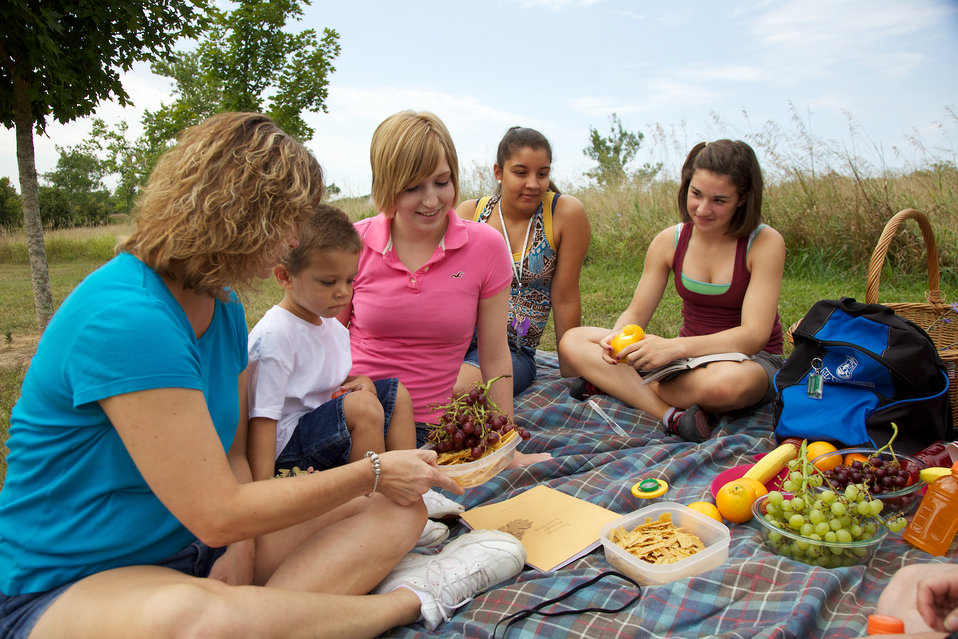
Environmental Education

Family enjoying the outdoors.